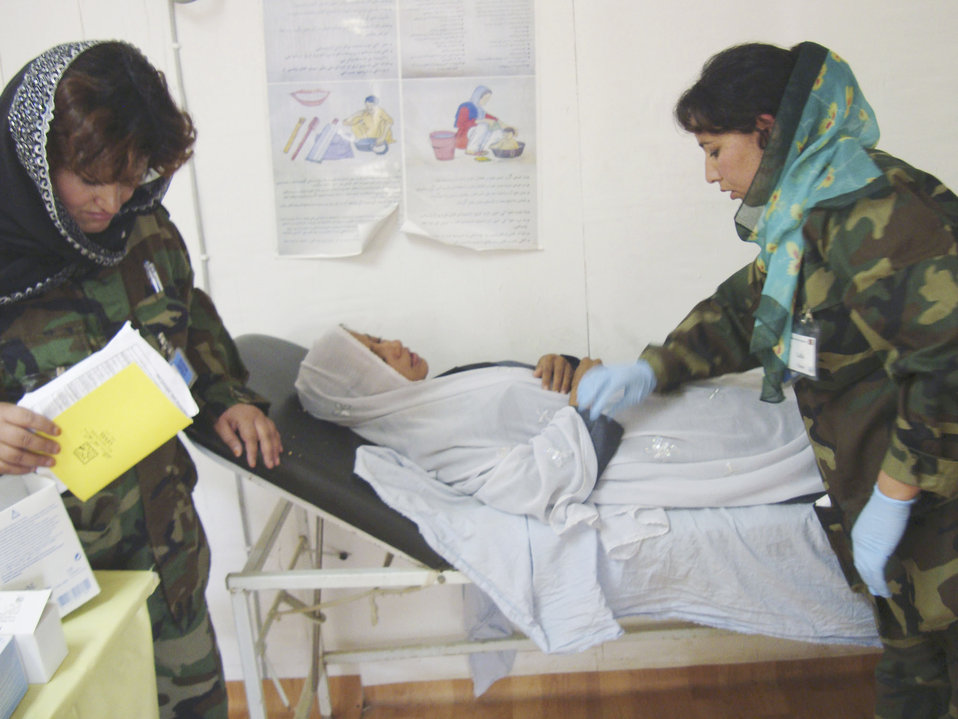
Craig Joint Theater Hospital helps build Afghan nursing foundation

Afghan National Army soldiers Malika Faqiri (left) and Laila Farahi help with an Afghan woman Oct. 14, 2009, at Bagram Airfield, Afghanistan. The two nurses attended a special two-week mentorship program at the Craig Joint Theater Hospital here to work alongside U.S. doctors and nurses to hone their medical skills and get first-hand experience with trauma-based care. The two soldiers were the first women to attend the special program.